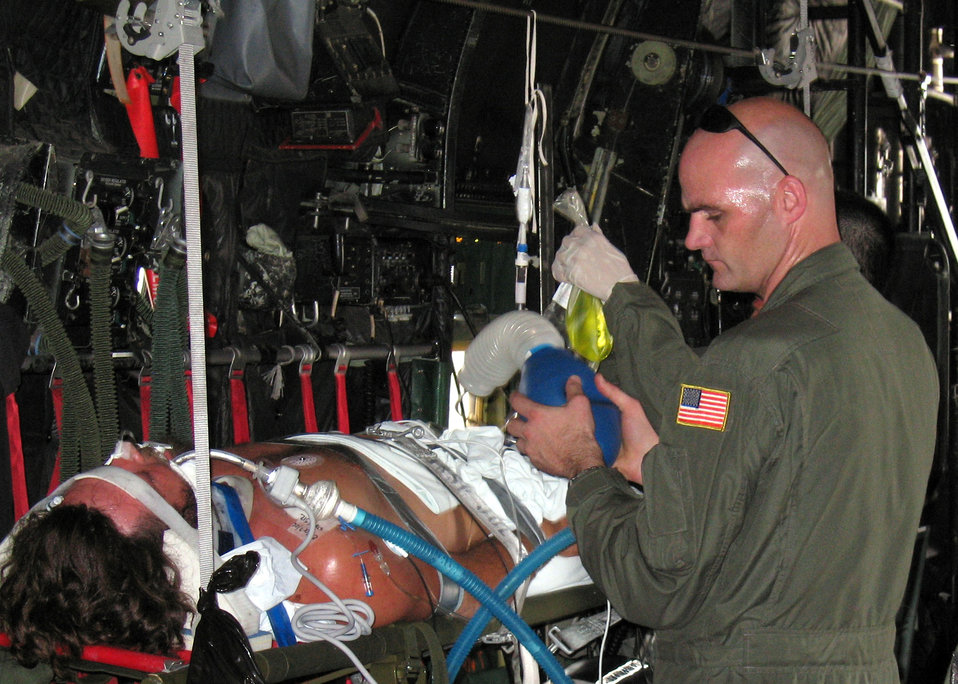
Mexico Rescue

Master Sgt. Eric Degner provides manual air to the patient.